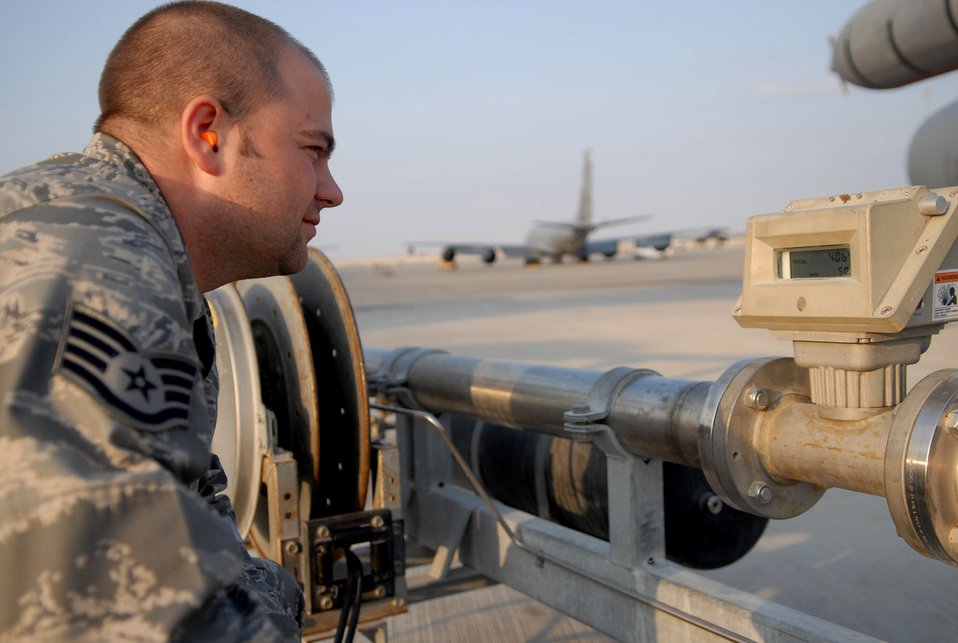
It's a gas

Staff Sgt. Mike Allen monitors the fuel delivered during a refueling operation Jan. 5 of a KC-135 Stratotanker at a Southwest Asia air base. Sergeant Allen is with the 379th Expeditionary Logistics Readiness Squadron and is deployed from Luke AFB, Ariz. His hometown is in Phoenix, Ariz.